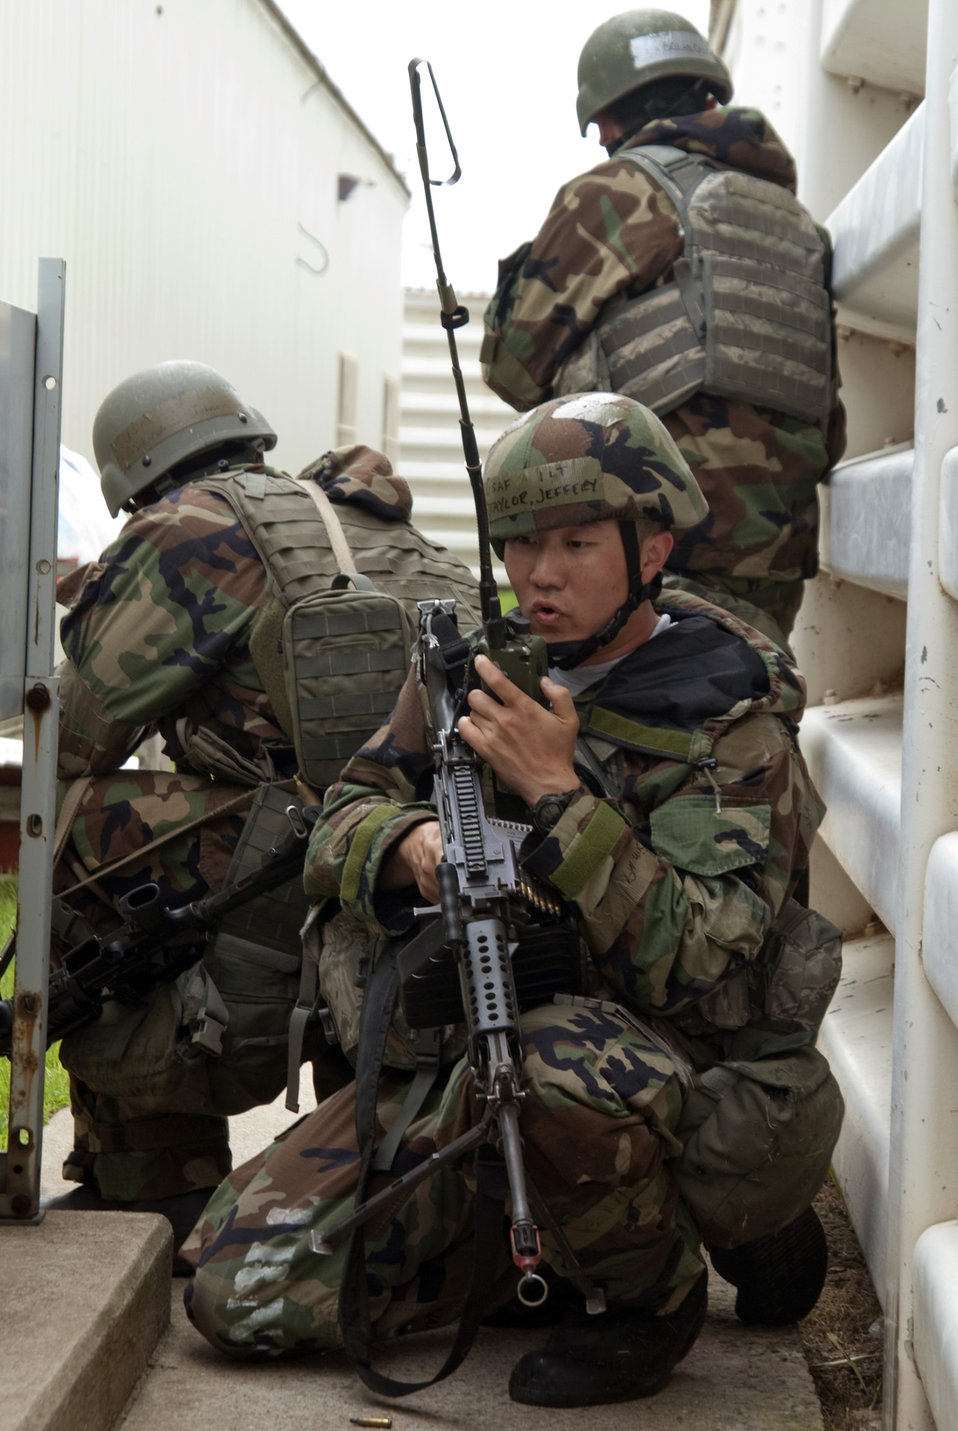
Kunsan Airmen test their skills

1st Lt. Jeffery Taylor, 8th Security Forces Squadron flight commander, radios in vital information after responding to a